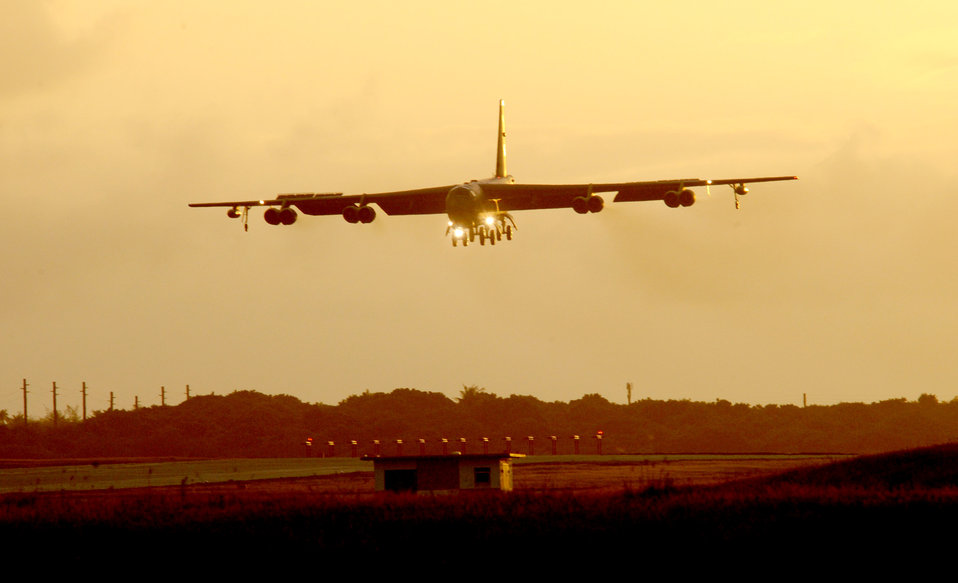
Hamel PB

Air Force B-52 Stratofortresses, similar to the one pictured here, flew from Andersen Air Force Base, Guam, to the land Down Under to demonstrate the capability and flexibility of the Stratofortress to Australian military partners, as part of Exercise Hamel, Oct. 8 through 18.